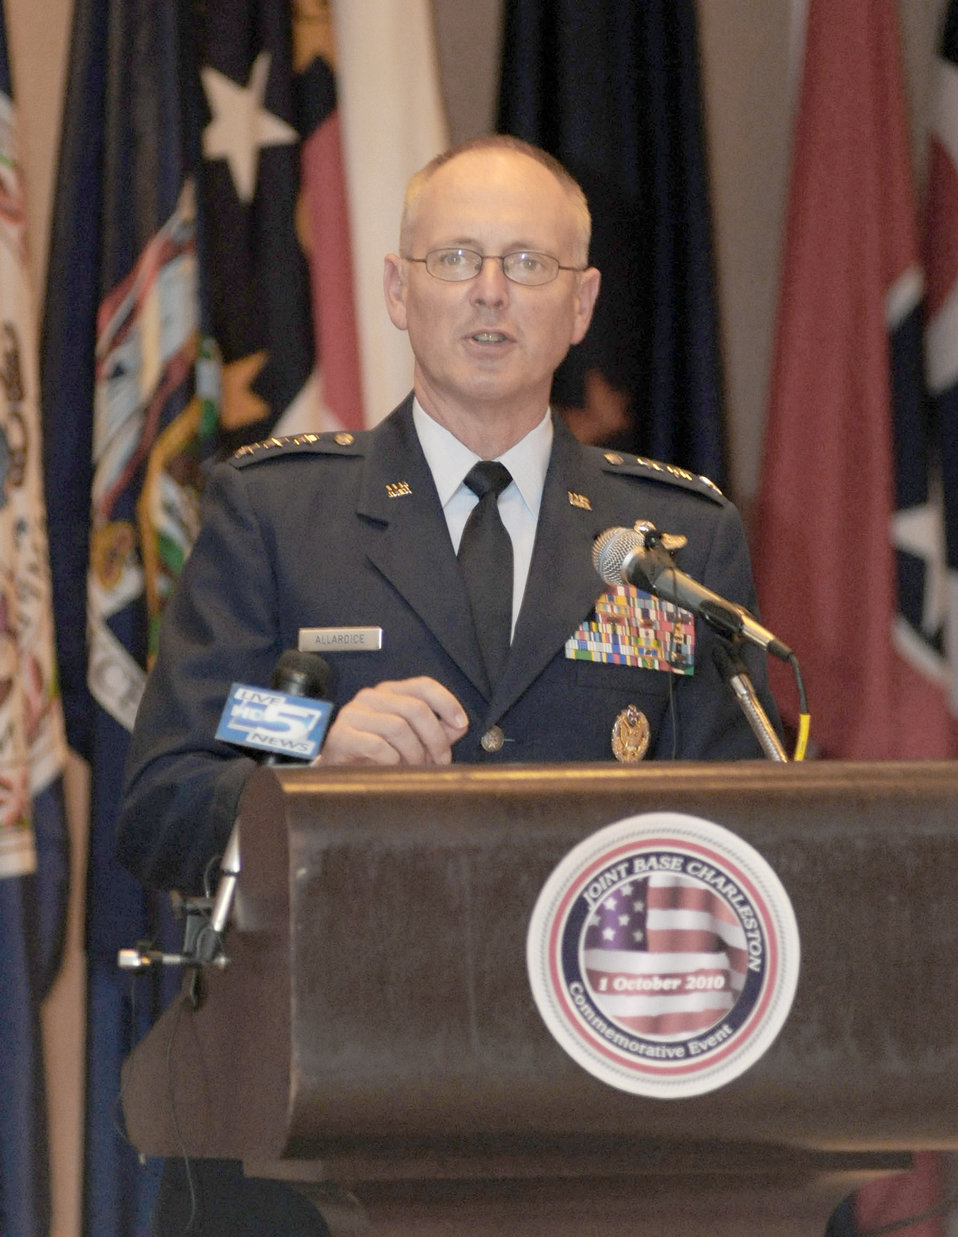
Joint Base Charleston

Lt. Gen. Robert Allardice gives his opening remarks Oct. 1, 2010, at the Joint Base Charleston inaugural ceremony on the Joint Base Charleston-Weapons Station in South Carolina.